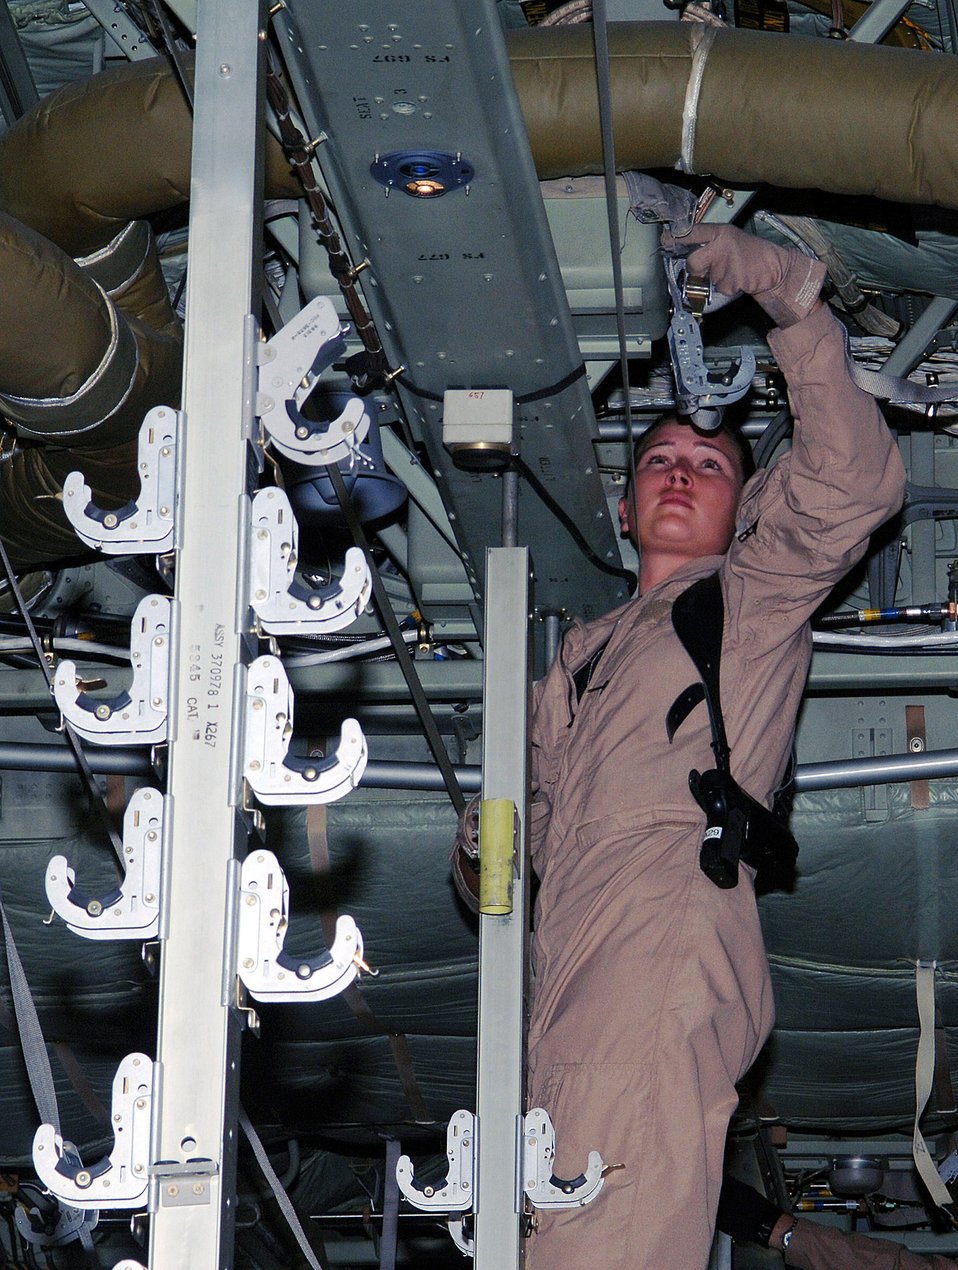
Saving servicemembers' lives one flight at a time

Senior Airman Amber O'Neil prepares litter straps on a C-130 Hercules at Bagram Air Base, Afghanistan, June 5 prior to bringing patients onboard for an aeromedical evacuation flight. Airman O'Neil is a medical technician with the 455th Expeditionary Aeromedical Evacuation Flight and is deployed from the Wyoming Air National Guard's 153rd Airlift Wing.